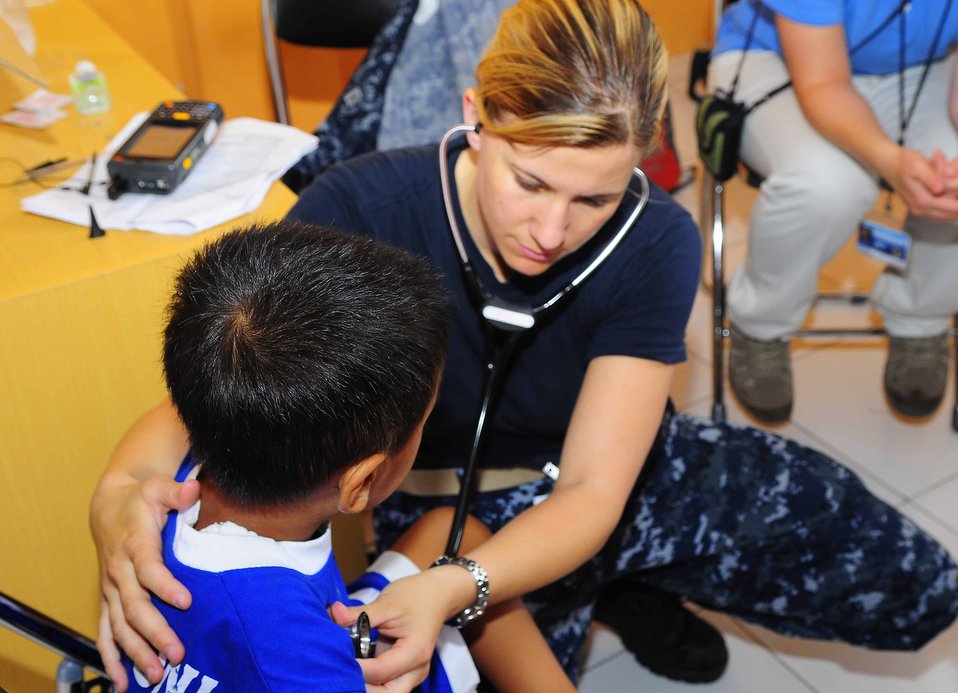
Lt. Dodt Screens a Medical Patient

Lt. Stacy Dodt screens a medical patient during a medical civic action program in Ternate, Indonesia, on July 23, 2010. Pacific Partnership 2010 is the fifth in a series of annual U.S. Pacific Fleet endeavors conducted in Indonesia as a disaster relief exercise aimed at strengthening regional partnerships.